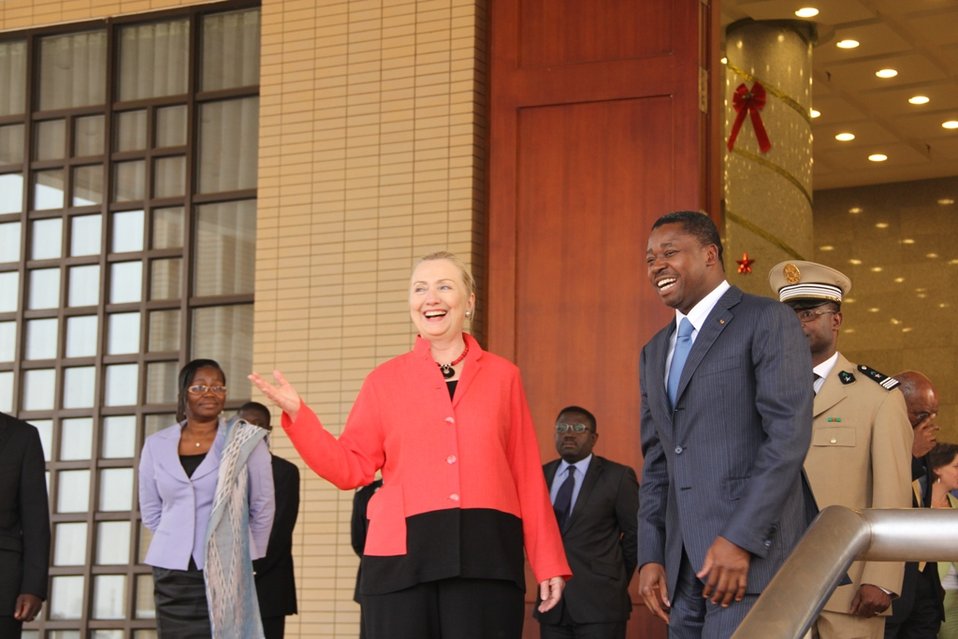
Secretary Clinton Speaks With Togolese President Gnassingbe

U.S. Secretary of State Hillary Rodham Clinton speaks with Togolese President Faure Gnassingbe in Lome, Togo, on January 17, 2012.